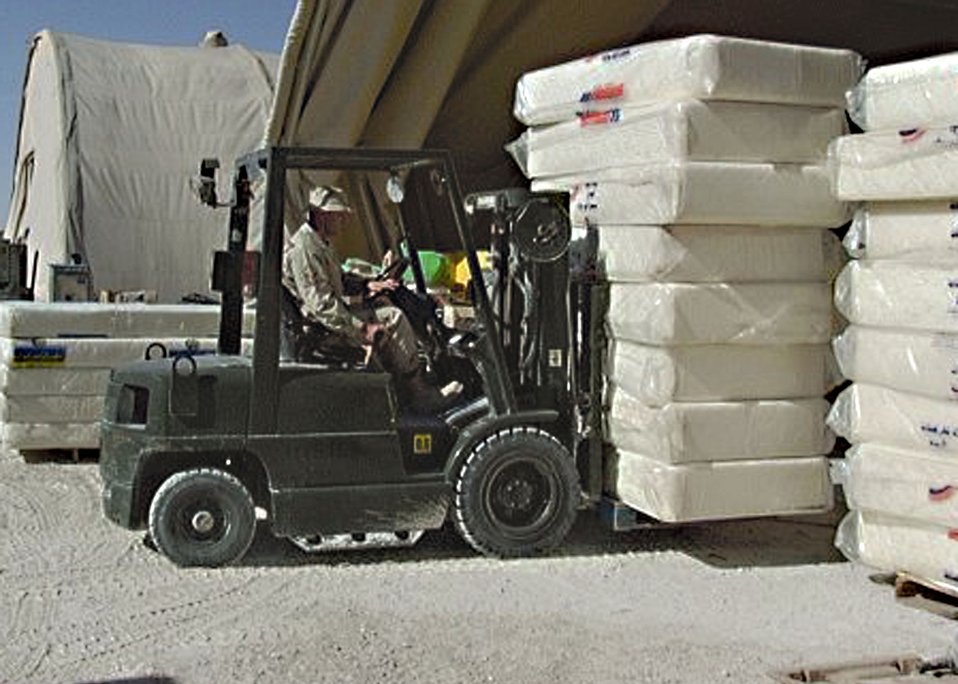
Deployed troops send relief to Southeast Asia survivors

SOUTHWEST ASIA -- Master Sgt. John Brinchi moves mattresses donated to tsunami victims in Sri Lanka. People from a forward-deployed location are working with host-nation officials to provide relief supplies to Southeast Asia. Sergeant Brinchi is deployed to the 379th Expeditionary Logistics Readiness Squadron from Seymour Johnson Air Force Base, N.C.